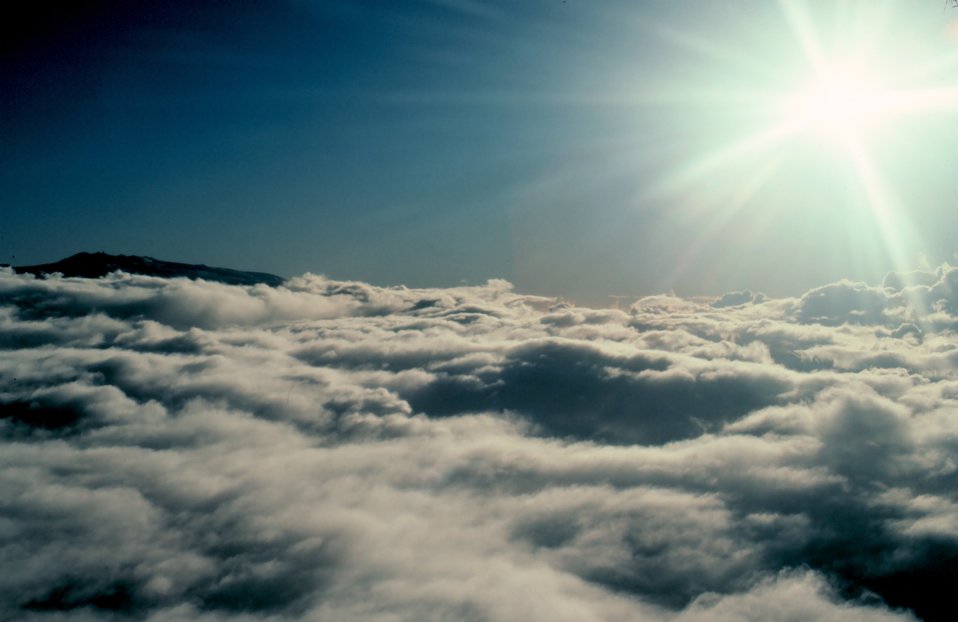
Mauna Kea above the cloud layer